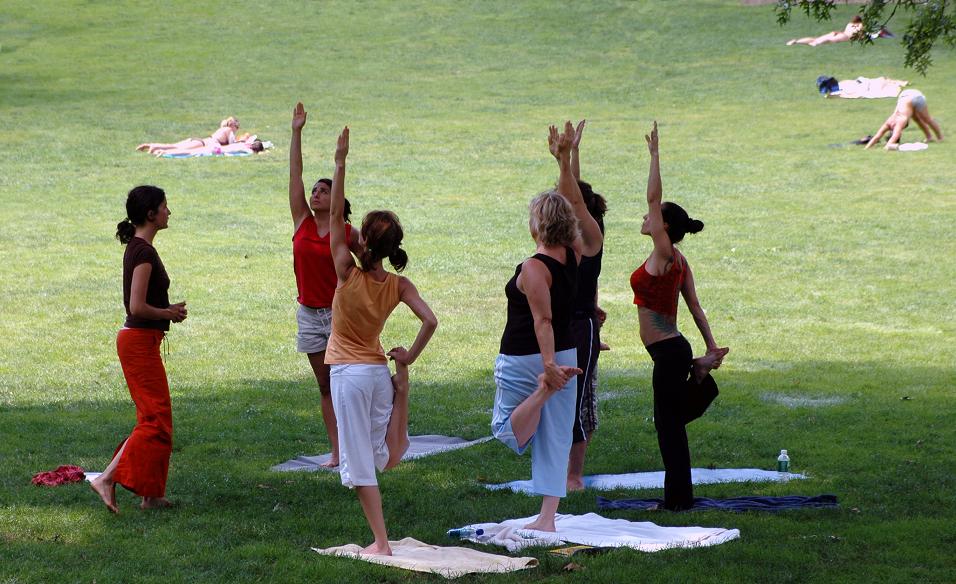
Uploaded by request of Kokyat Choong

Taken in Central Park, Manhattan, New York

Enjoying yoga in Central Park during a sunny afternoon